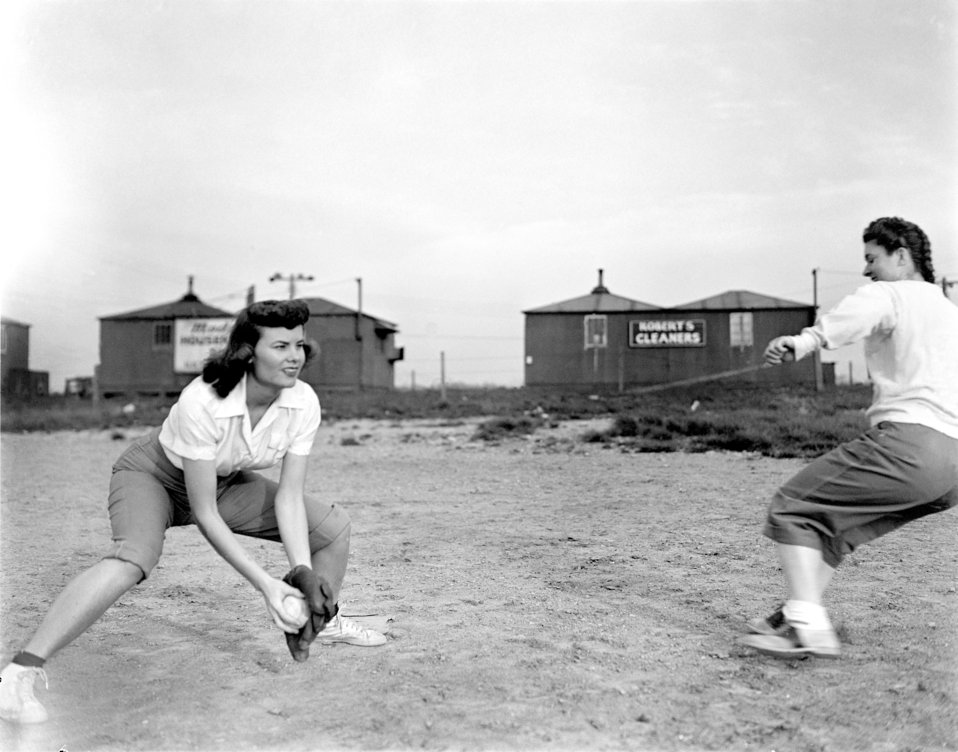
Softball Oak Ridge 1947

3424-4a DOE photo Ed Westcott 4-24-1947 Oak Ridge Tennessee